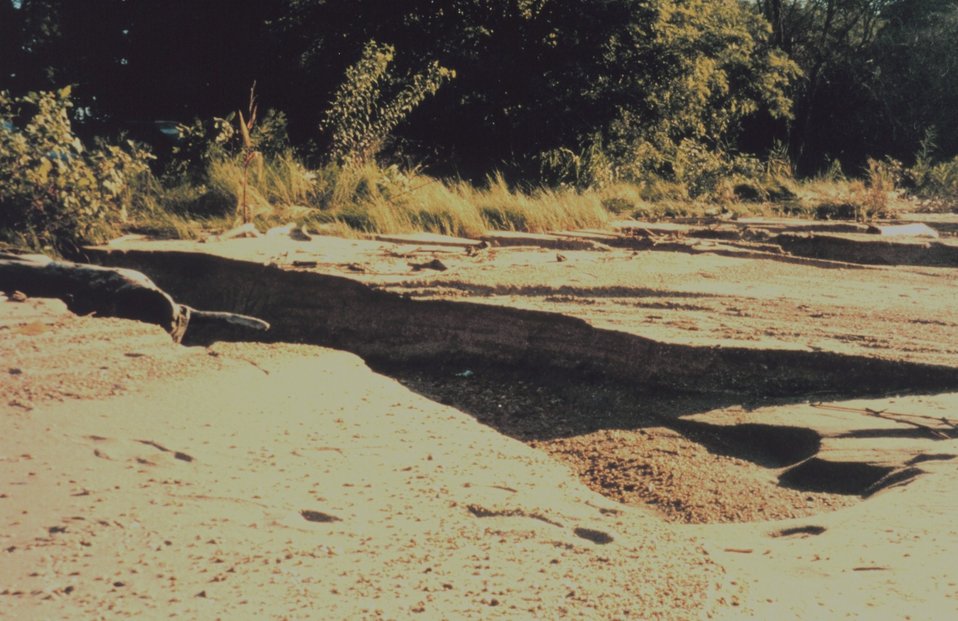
Erosion damage to a beach near Baltimore as a result of Hurricane Floyd.